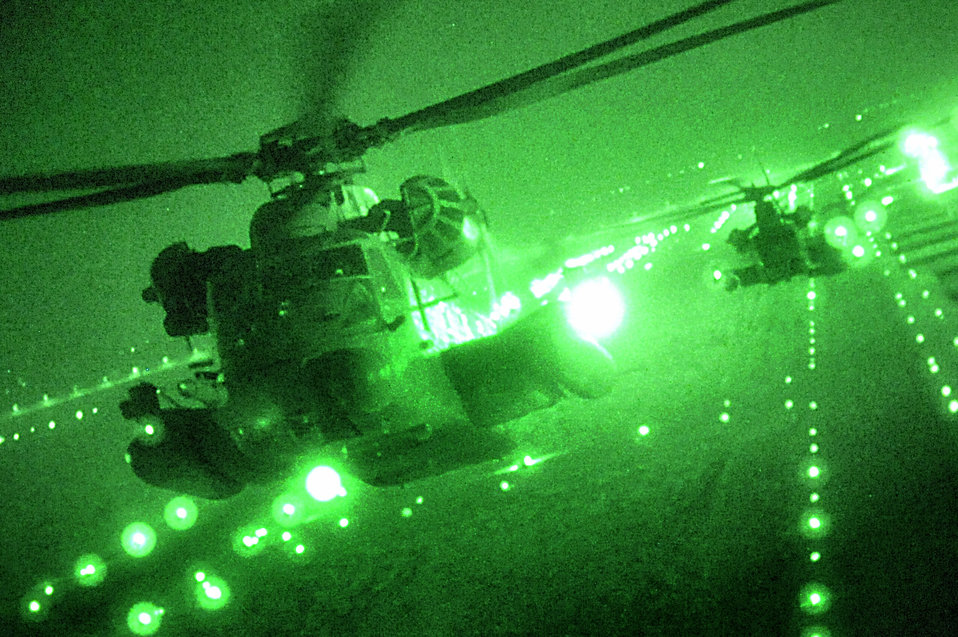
MH-53s fly final combat missions

MH-53 Pave Lows from the 20th Expeditionary Special Operations Squadron fly over Iraq on their last combat missions Sept 27. The MH-53 is being retired after nearly 40 years of service to the Air Force.